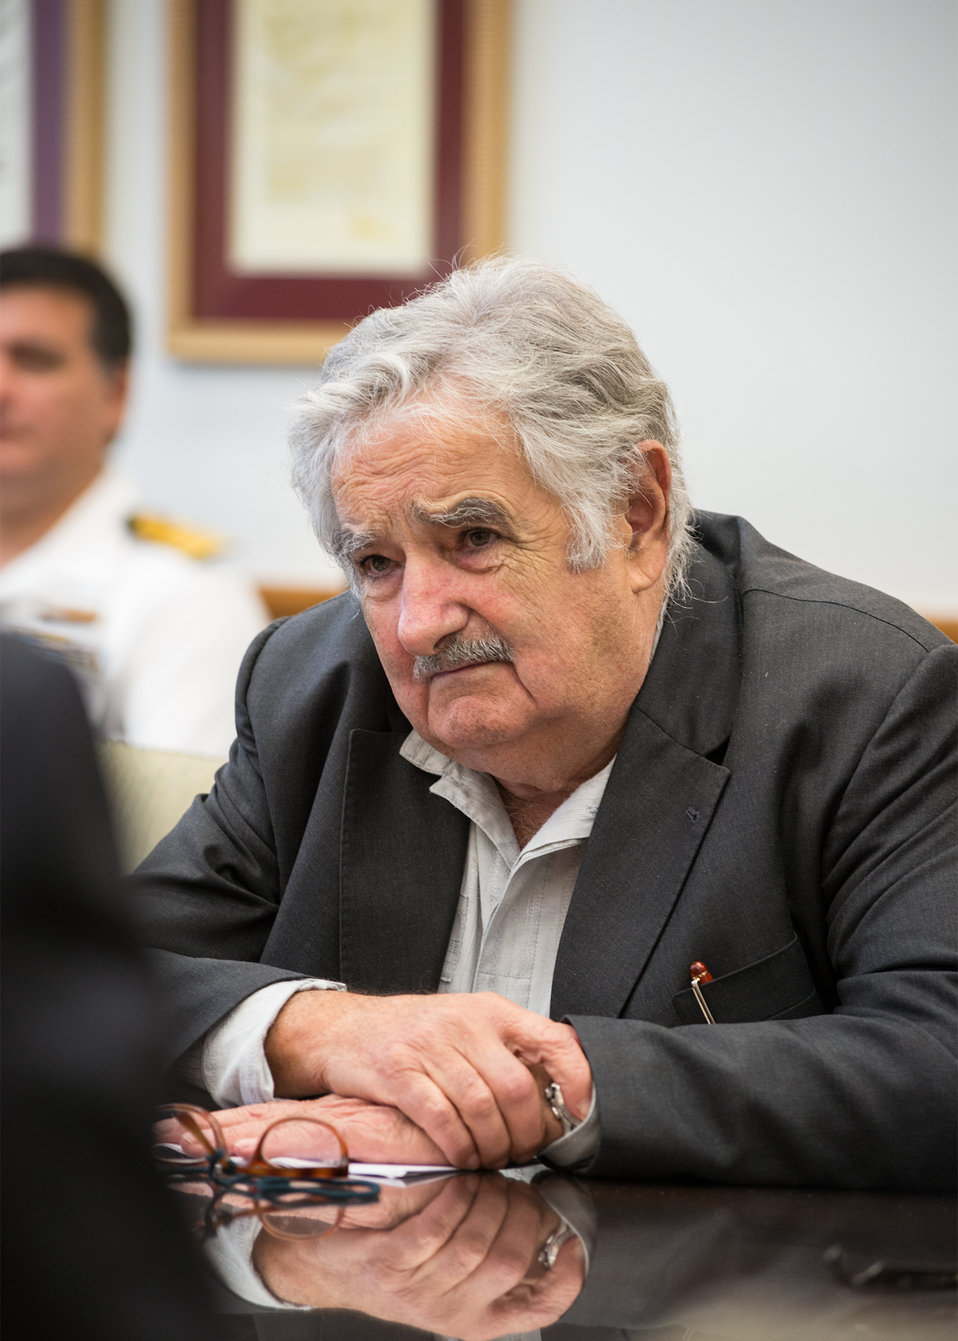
Uruguay President Jose Mujica discusses cooperation in agricultural research, production and climate changes on agriculture with Agriculture Secretary Tom Vilsack at the U.S. Department of Agriculture (USDA) in Washington, D.C. on Wednesday, May 14, 2014.